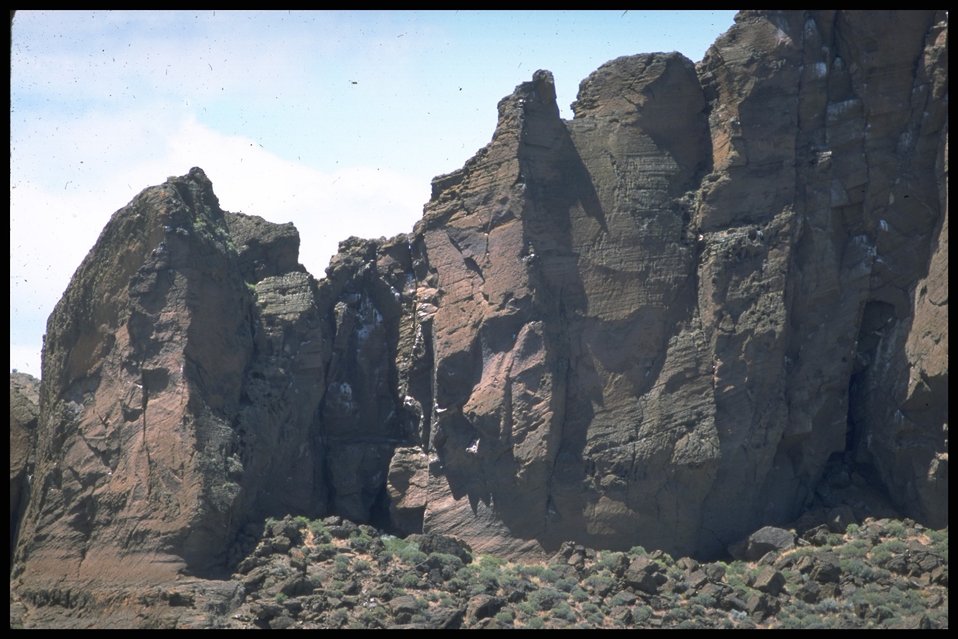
Scenic view, Ft. Rock, Lakeview District.